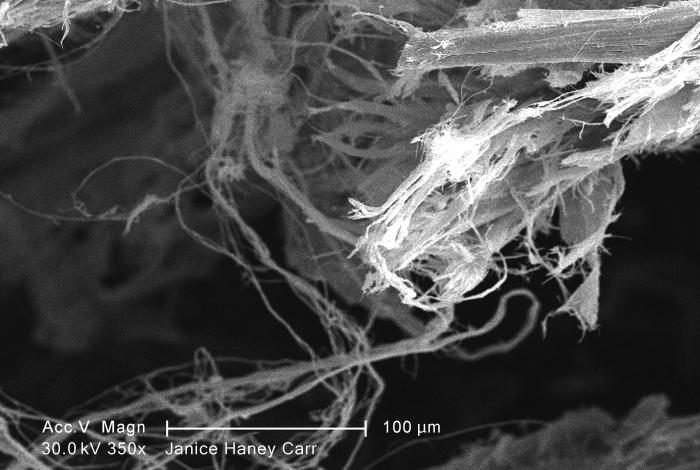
Under a moderate magnification of 800X, this scanning electron micrograph (SEM) revealed some of the microcrystalline ultrastructure exhibited by a piece of raw chrysotile, or white asbestos, which had been excavated from the Lowell Asbestos Mine on Belvidere Mountain, Vermont.